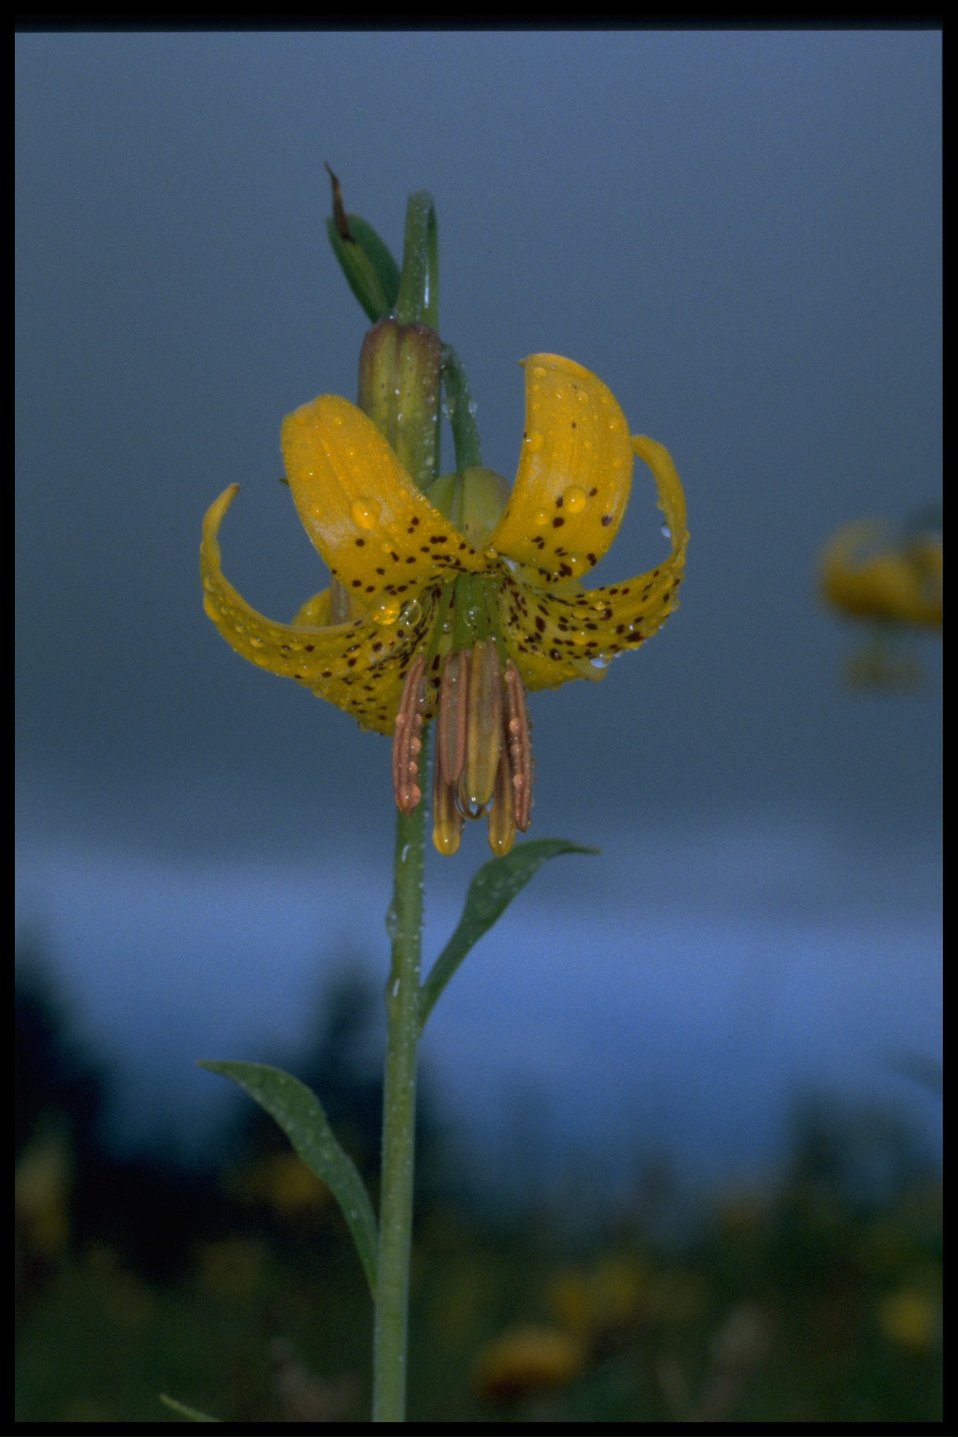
Medium shot of tiger lily, Lilium columbianum.